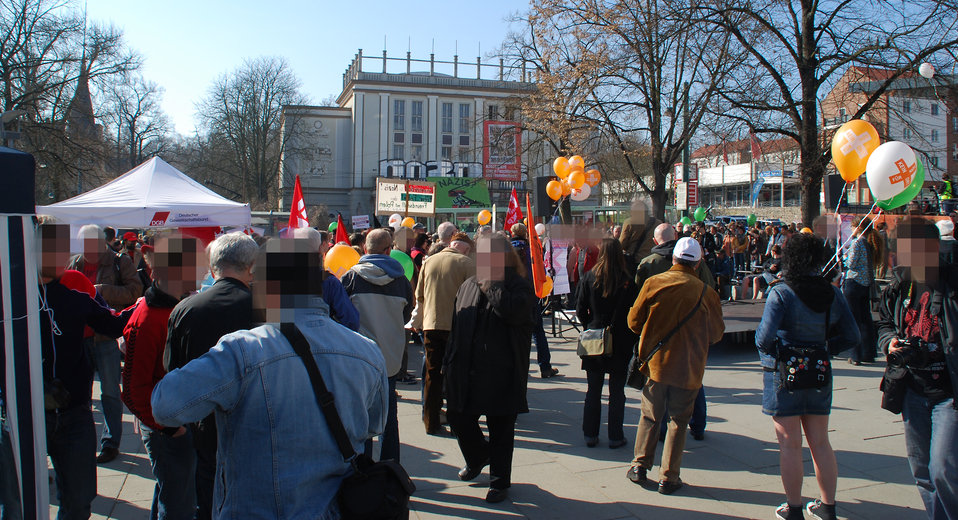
Proteste gegen den Nazi-Aufmarsch am 24.3.2012 in Frankfurt (Oder)